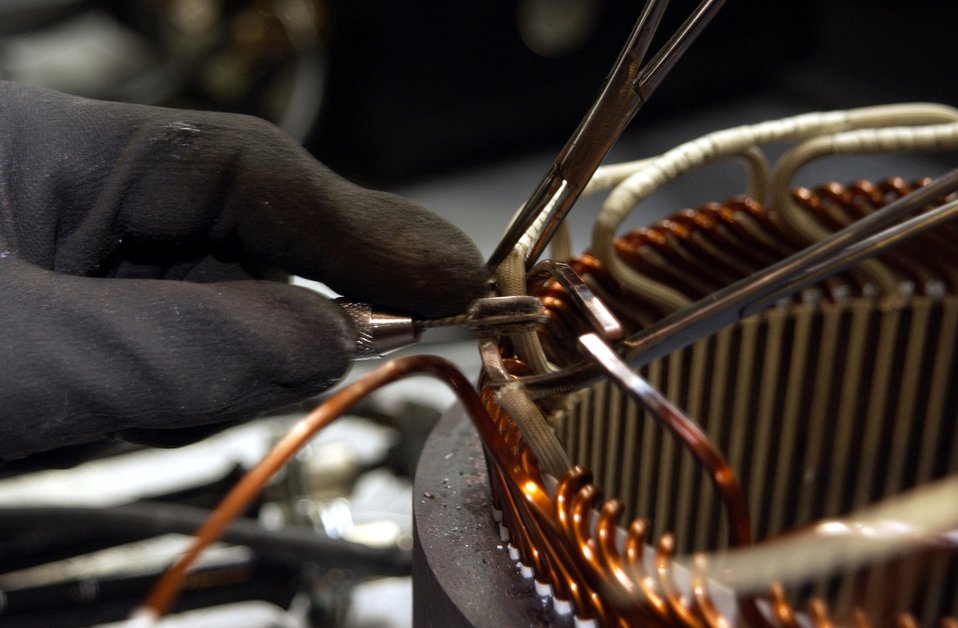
Creating power behind airpower

HILL AIR FORCE BASE, Utah -- Before brazing the coil leads of a KC-135 Stratotanker generator, they must be carefully cleaned. Workers in the 309th Generator Squadron's airborne flight restore generators from all types of aircraft, including some from other branches of the service.